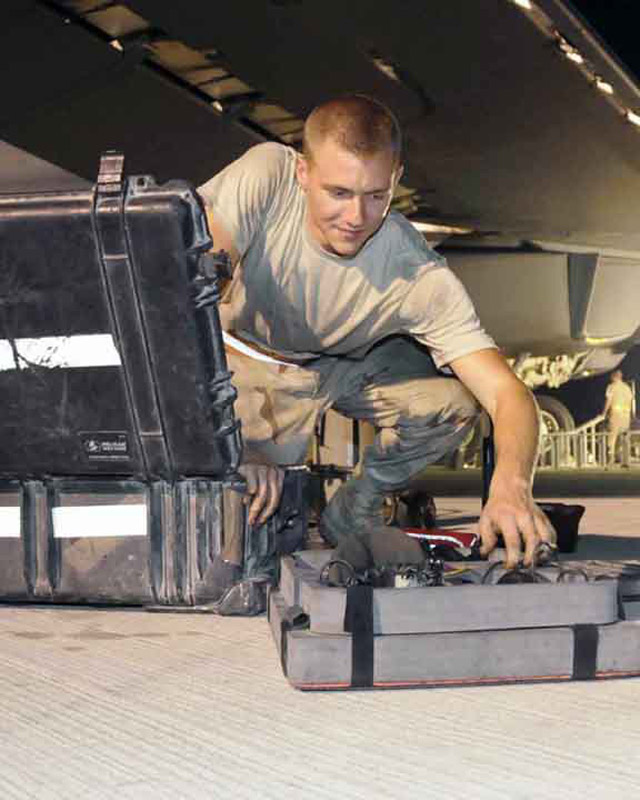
Nocturnal workers

Airman 1st Class Ed Kovalcin inventories tools used to repair and maintain the B-1B Lancer aircraft May 29 in Southwest Asia. Airman Kovalcin is with the 37th Aircraft Maintenance Unit.